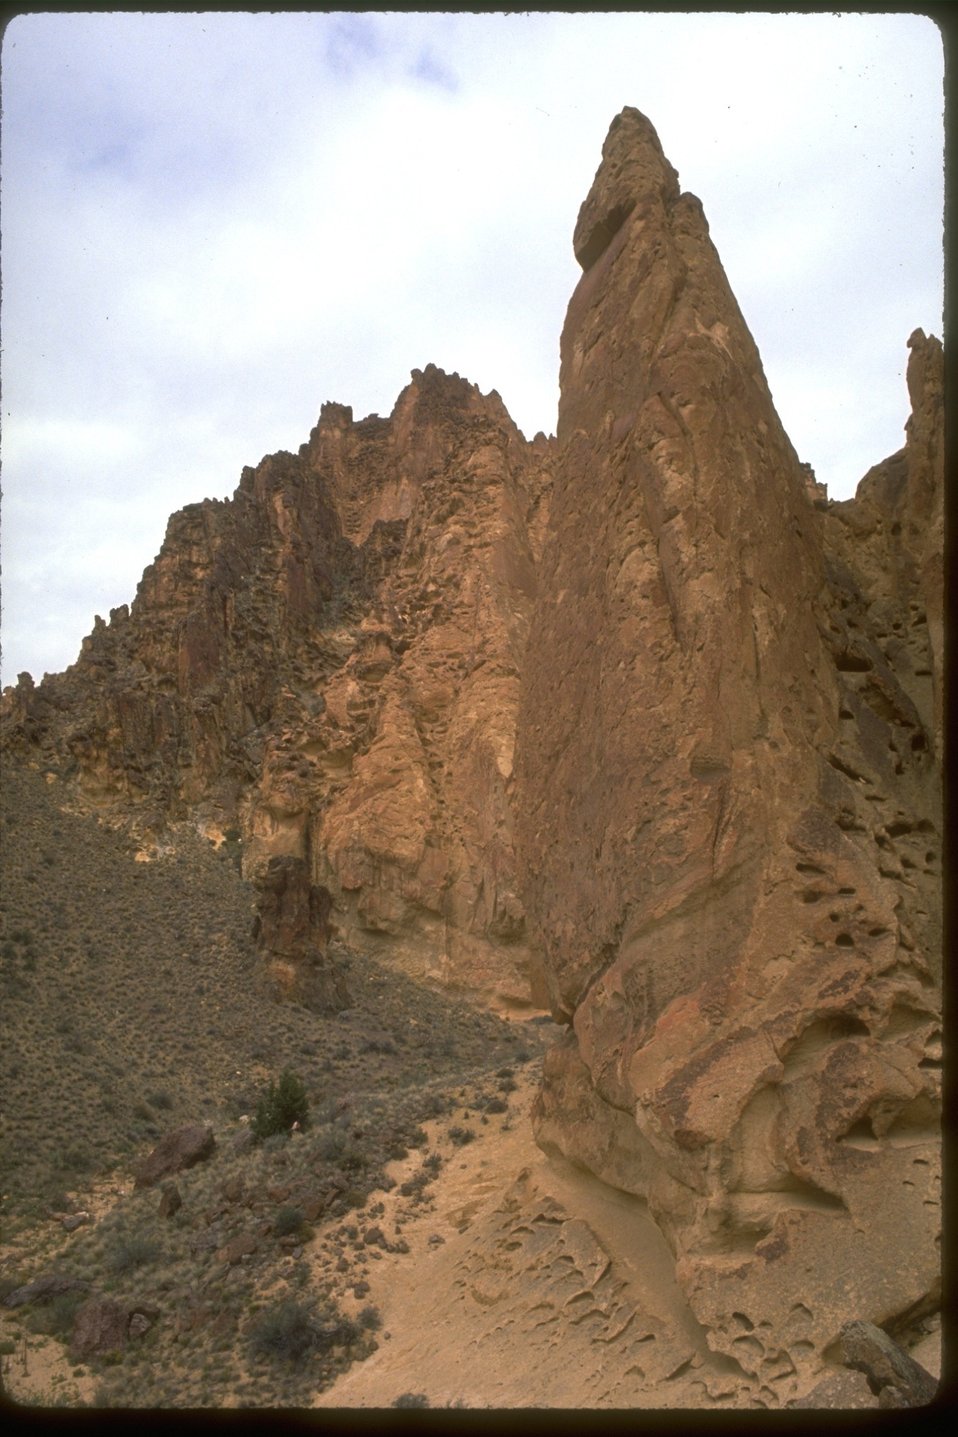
Leslie Gulch Series: view of large rock formation.